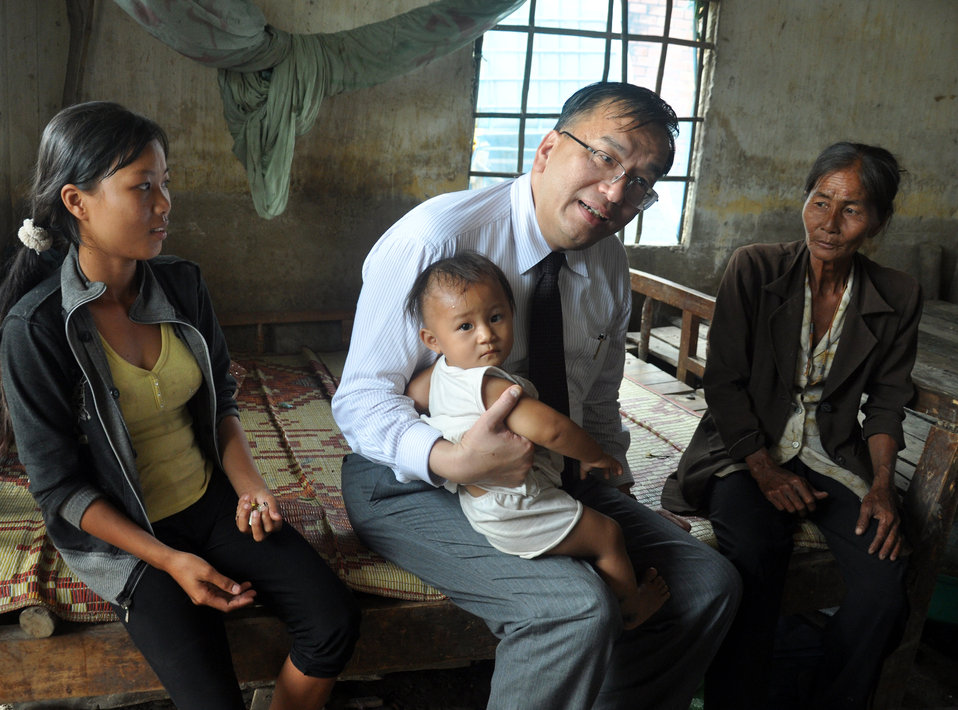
U.S. Consul General Le An visits USAID beneficiaries

USAID site visit to Long An Province to visit flood relief beneficiaries